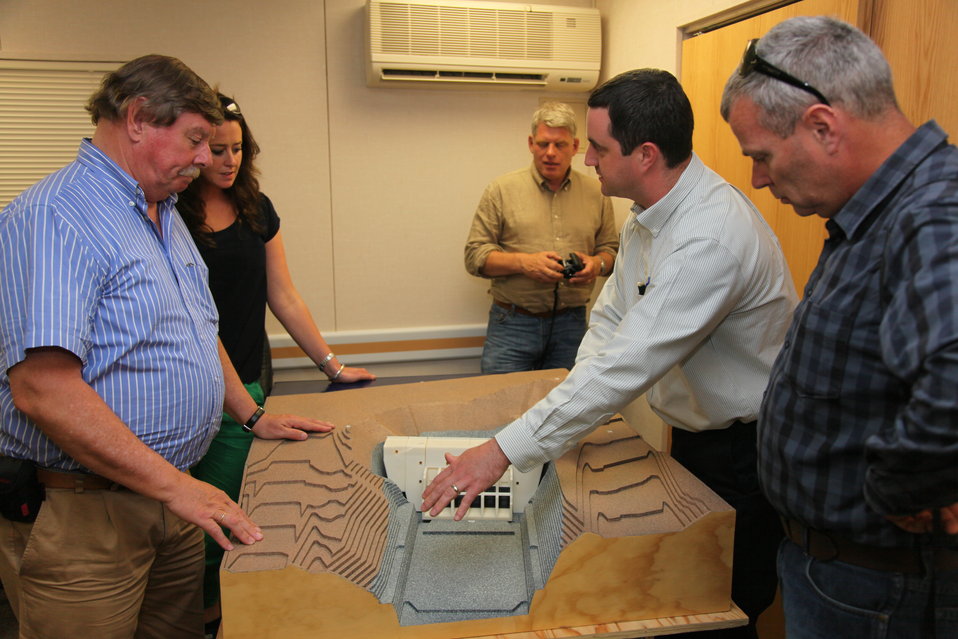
Dutch delegates tour District levees and Folsom project

Eric Nagy (second from right) civil engineer for the U.S. Army Corps of Engineers Sacramento District, points out key features of an auxiliary spillway model to a Dutch delegate June 26, 2012, during a tour of the Corp’s Folsom Dam Joint Federal Project in Folsom, Calif. Nagy and other project personnel led an auxiliary spillway tour for visiting Dutch delegates from the Ministry of Transport, Public Works and Water Management who came to learn more about the Corps’ flood risk reduction missions around Sacramento.